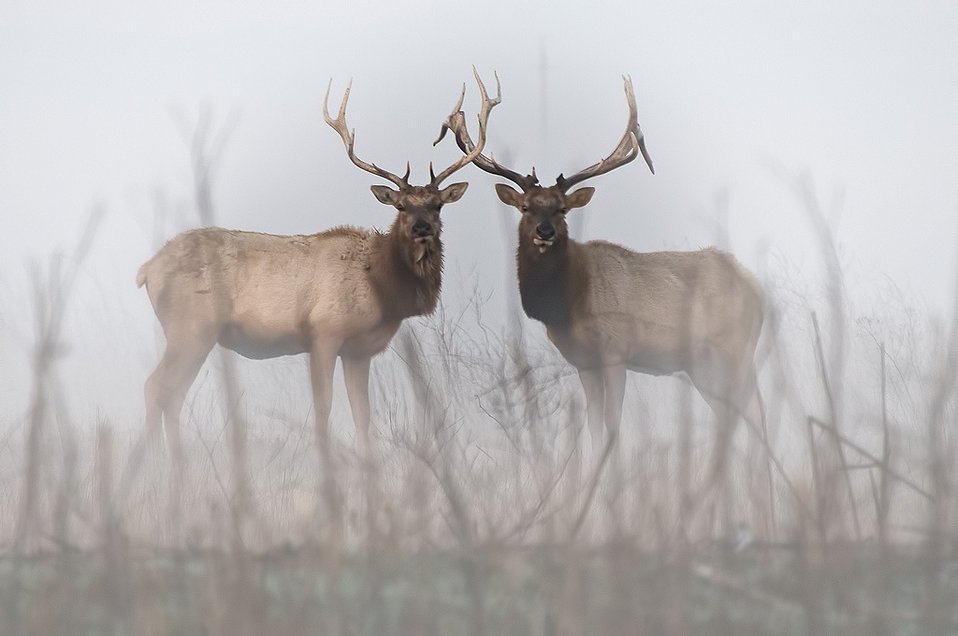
bull elk take a break from sparring...

...to stare down a visitor in this late February photo at San Luis National Wildlife Refuge in CA.